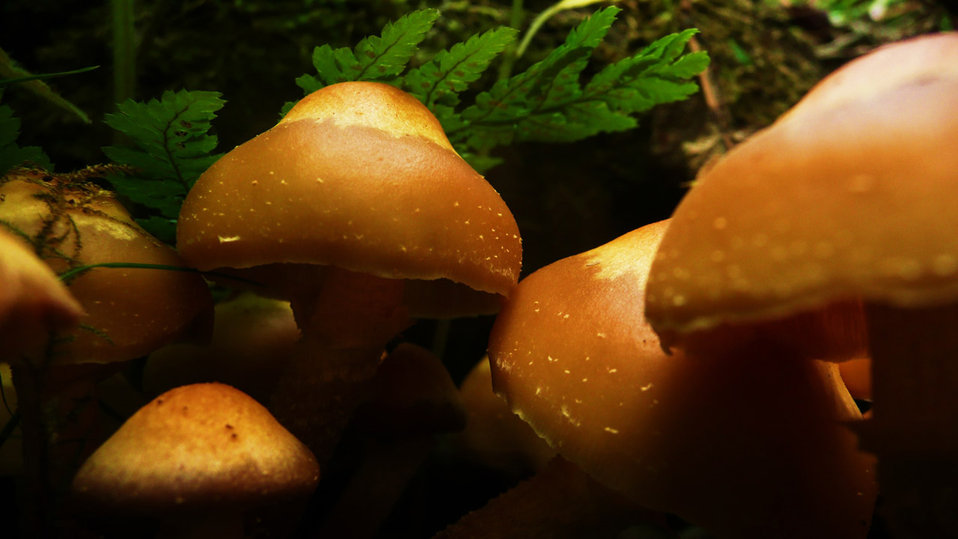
Mushrooms in the forest.